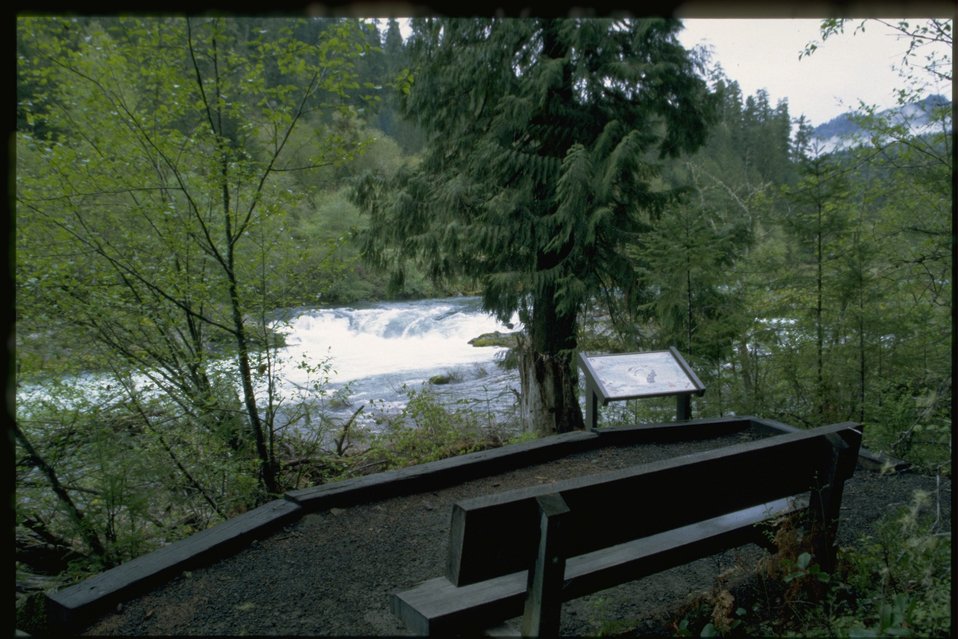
Interpretative sign along Swiftwater recreation trail.